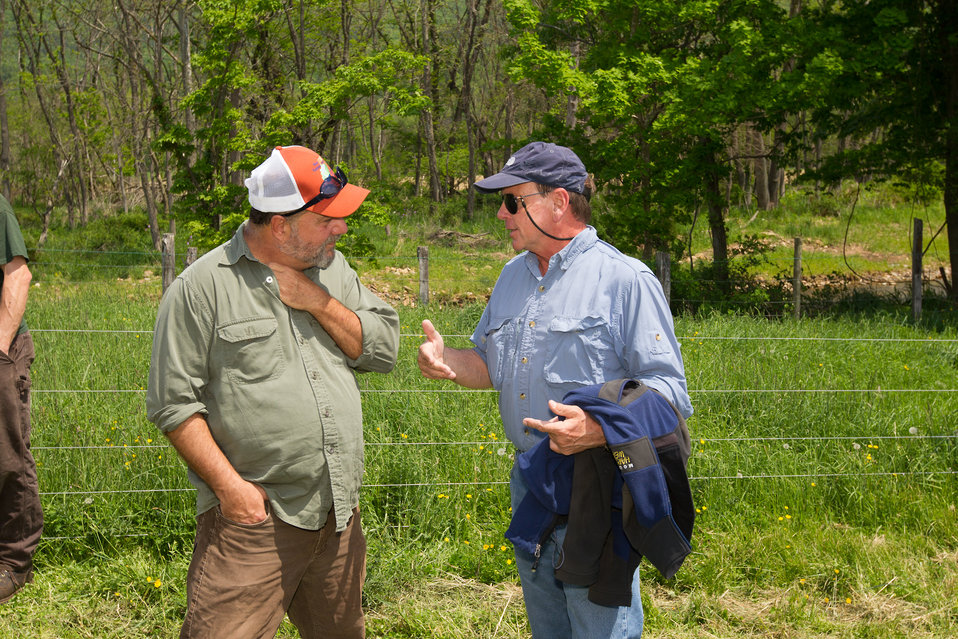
Celebrating 1 Million Feet of Conservation Fence in WV

Partners for Fish and Wildlife Program